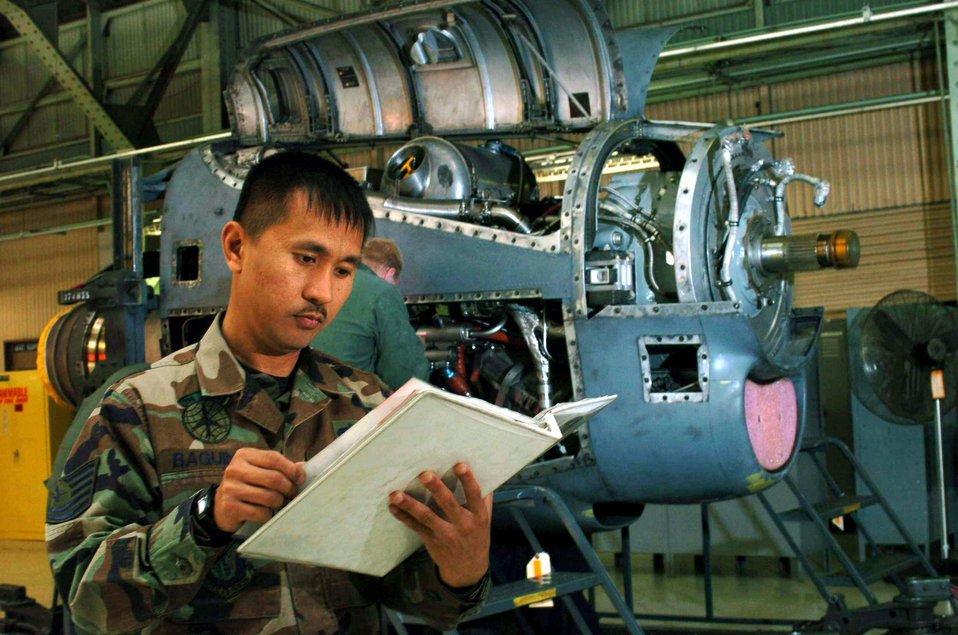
Engine's lookin' good!

YOKOTA AIR BASE, Japan -- Tech. Sgt. Gilbert Baguinon refers to his checklist to ensure correct procedures are followed during a routine inspection of a C-130 Hercules engine. Regional repair center workers here inspect and repair all C-130 engines within Pacific Air Forces. Sergeant Baguinon is a mechanic with the 374th Maintenance Squadron.